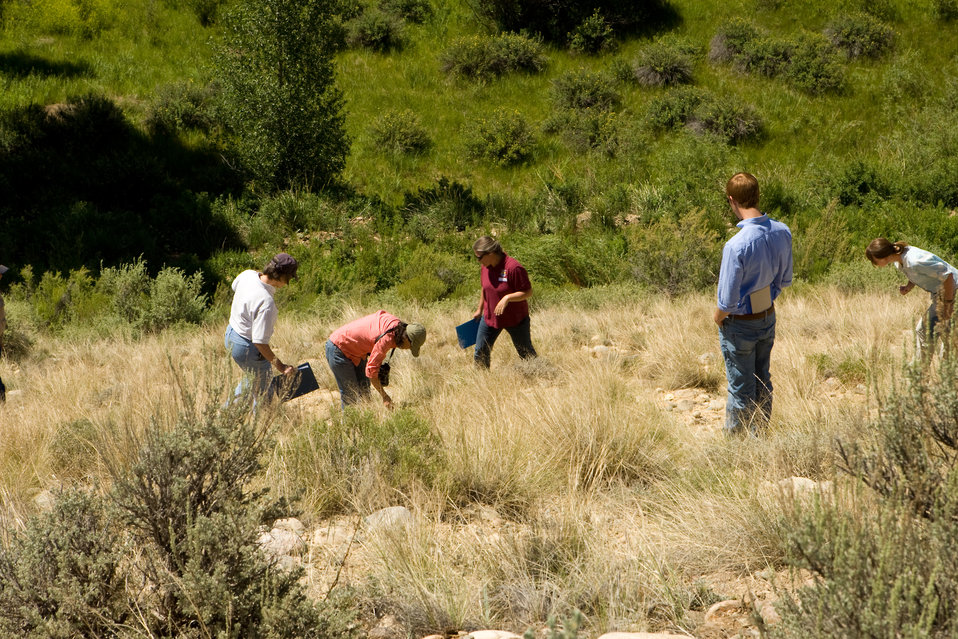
Colorado Rare Plant Conservation Initiative

The Colorado Rare Plant Conservation Initiative (RPCI) is a partnership of 23 statewide and regional agencies, private organizations, and academic institutions working to conserve 121 rare plants in Colorado. As part of these efforts the group developed the Colorado Rare Plant Conservation Strategy, developed Best Management Practices to reduce energy development impacts, addressed climate change, and developed focused strategies for the conservation of individual species at eight priority landscapes. The group has also worked to coordinate volunteer efforts for plant conservation across the state.